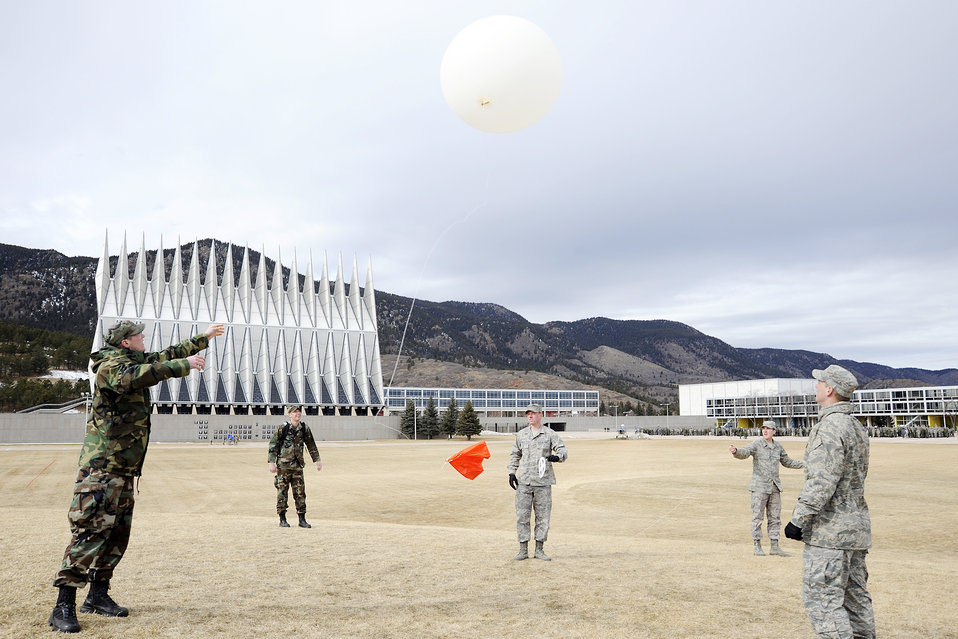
U.S. Air Force Academy, Colo-- Cadet 1st Class John Bowman releases the weather balloon as other meteorology students keep the line attached with the parachute and radiosonde from being entangled during launch as part of the Meterology 320 course, Introduction to Meteorology and Aviation Weather. This course teaches the fundamentals of meteorology with special emphasis placed on flight weather and its impact on aviation.